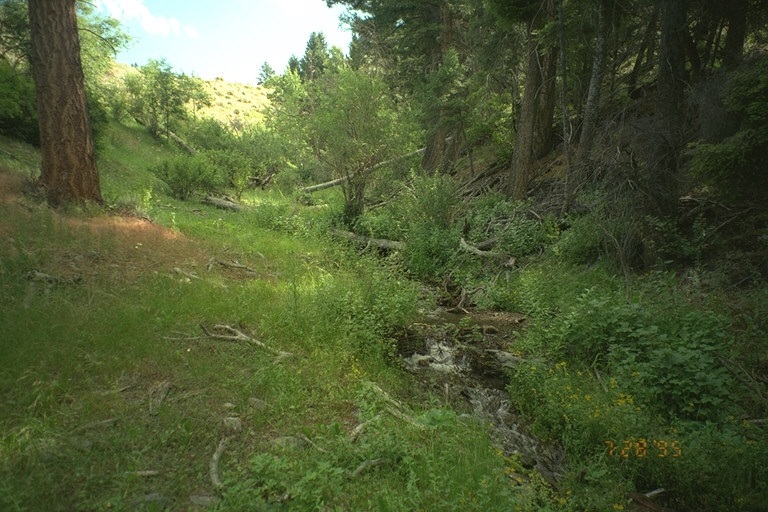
Riparian area Public Lands Salmon Field Office UCSC Upper Columbia Salmon Clearwater District